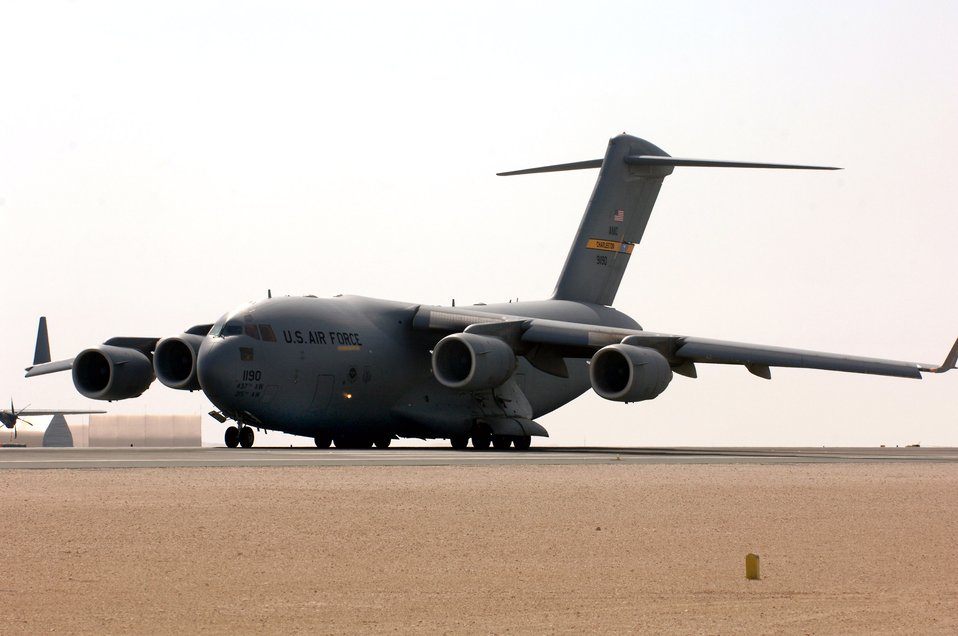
C-17

A C-17 Globemaster III from Charleston AFB, prepares to take off from a deployed location in Southwest Asia.The C-17 is the newest, most flexible cargo aircraft to enter the airlift force. The C-17 is capable of rapid strategic delivery of troops and all types of cargo to main operating bases or directly to forward bases in the deployment area. The aircraft can perform tactical airlift and airdrop missions and can also transport litters and ambulatory patients during aeromedical evacuations when required. The inherent flexibility and performance of the C-17 force improve the ability of the total airlift system to fulfill the worldwide air mobility requirements of the United States.